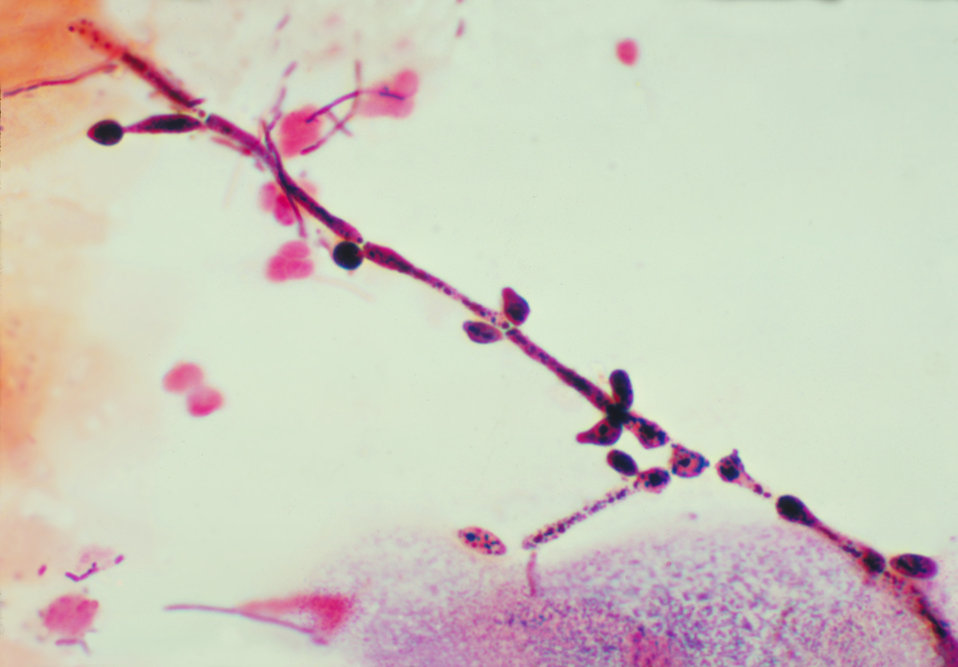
This is a photomicrograph of a vaginal smear identifying Candida albicans using gram-stain technique.